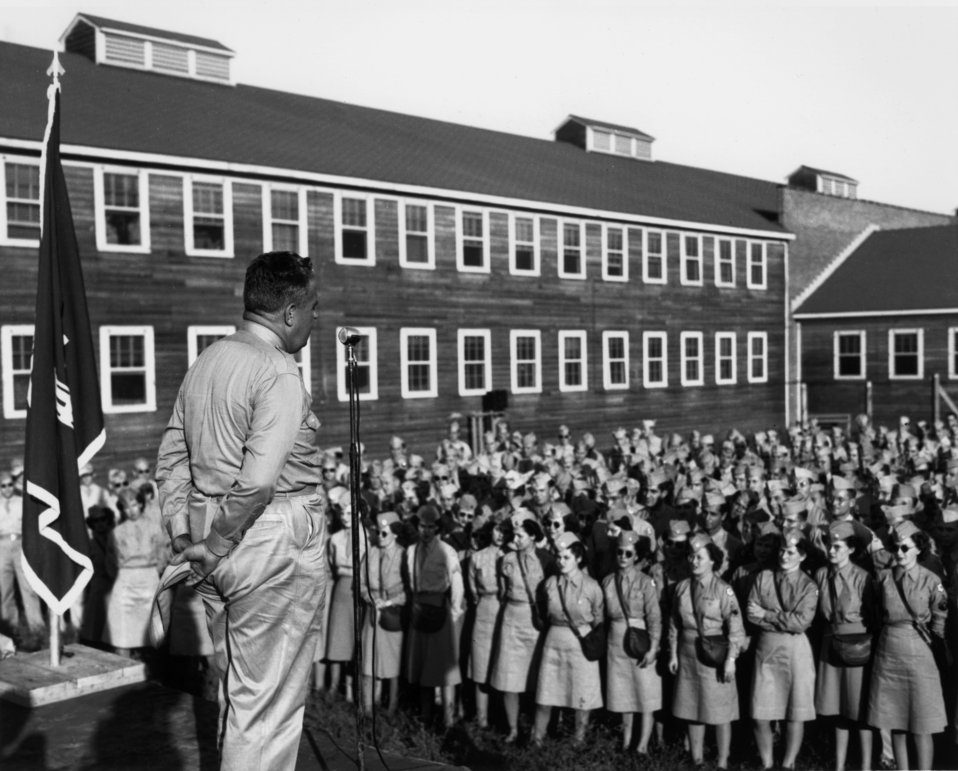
Groves Speaking to Service Personal Oak Ridge

PRO976-1 DOE photo by Ed Westcott General Lislie Groves Speaking to Service Personal Oak Ridge Tennessee
8/29/45